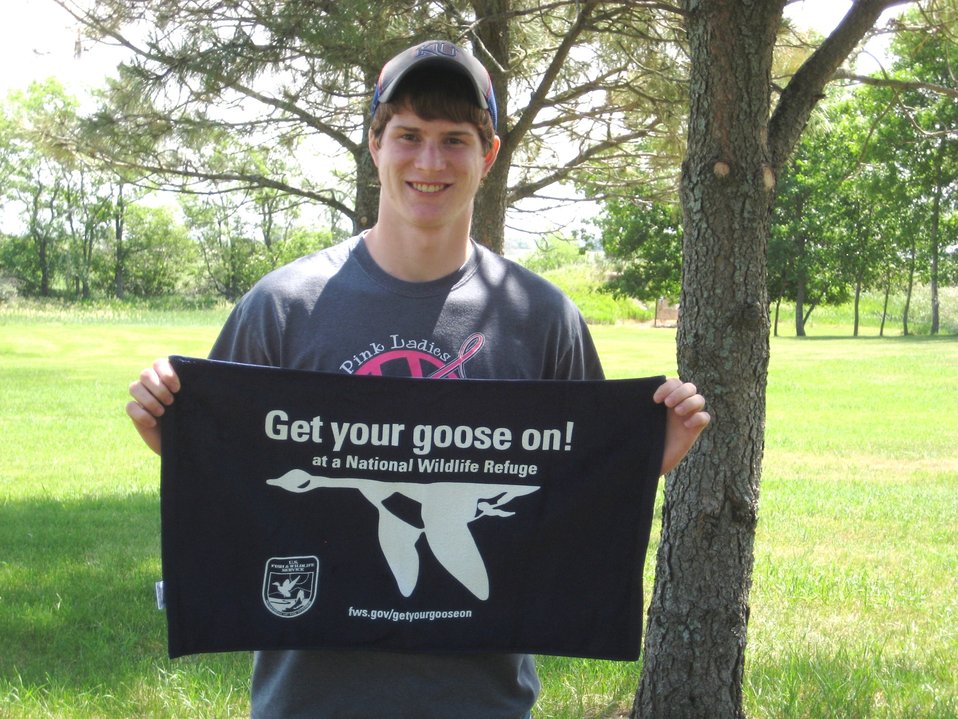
Get Your Goose On!

Taken at Tewaukon National Wildlife Refuge.